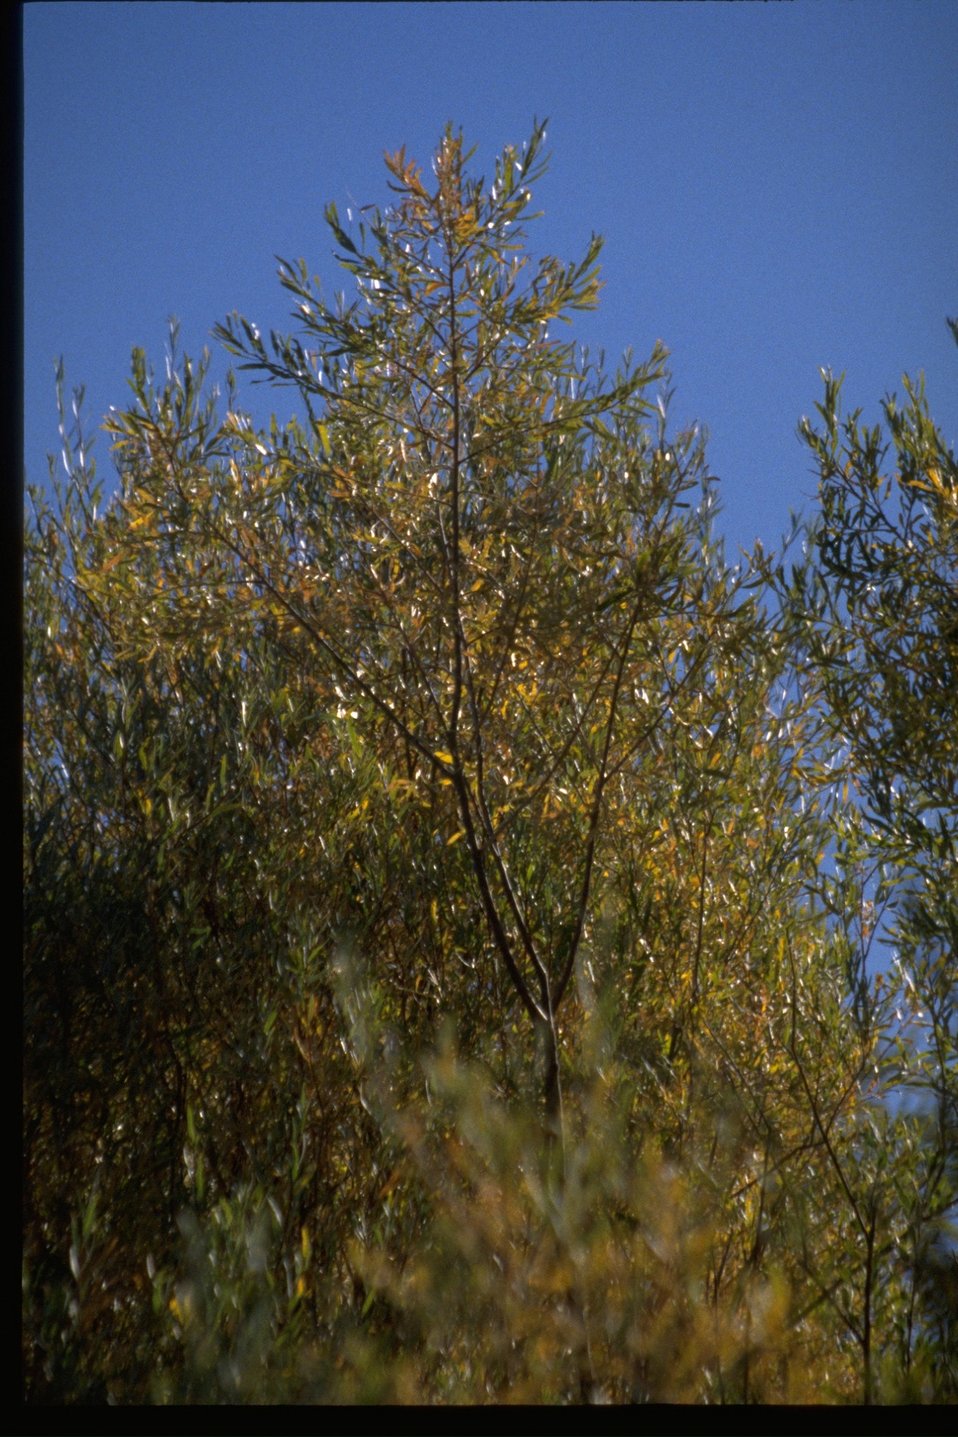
Riparian vegetation along the bank of the John Day River, near Bridge Creek.